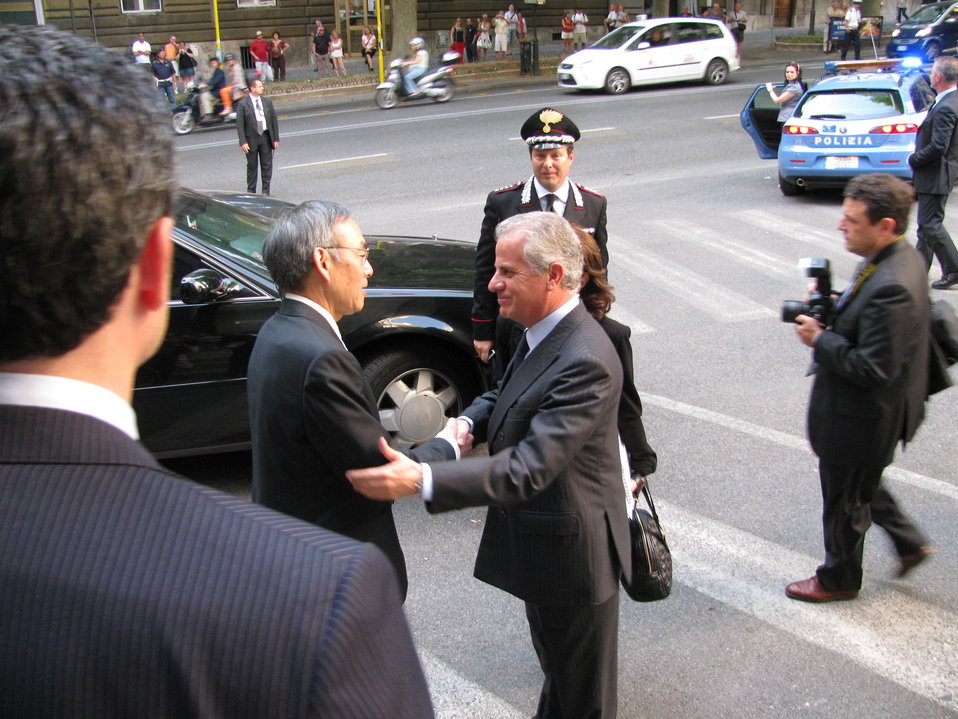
Street greeting of Italian Energy Minister